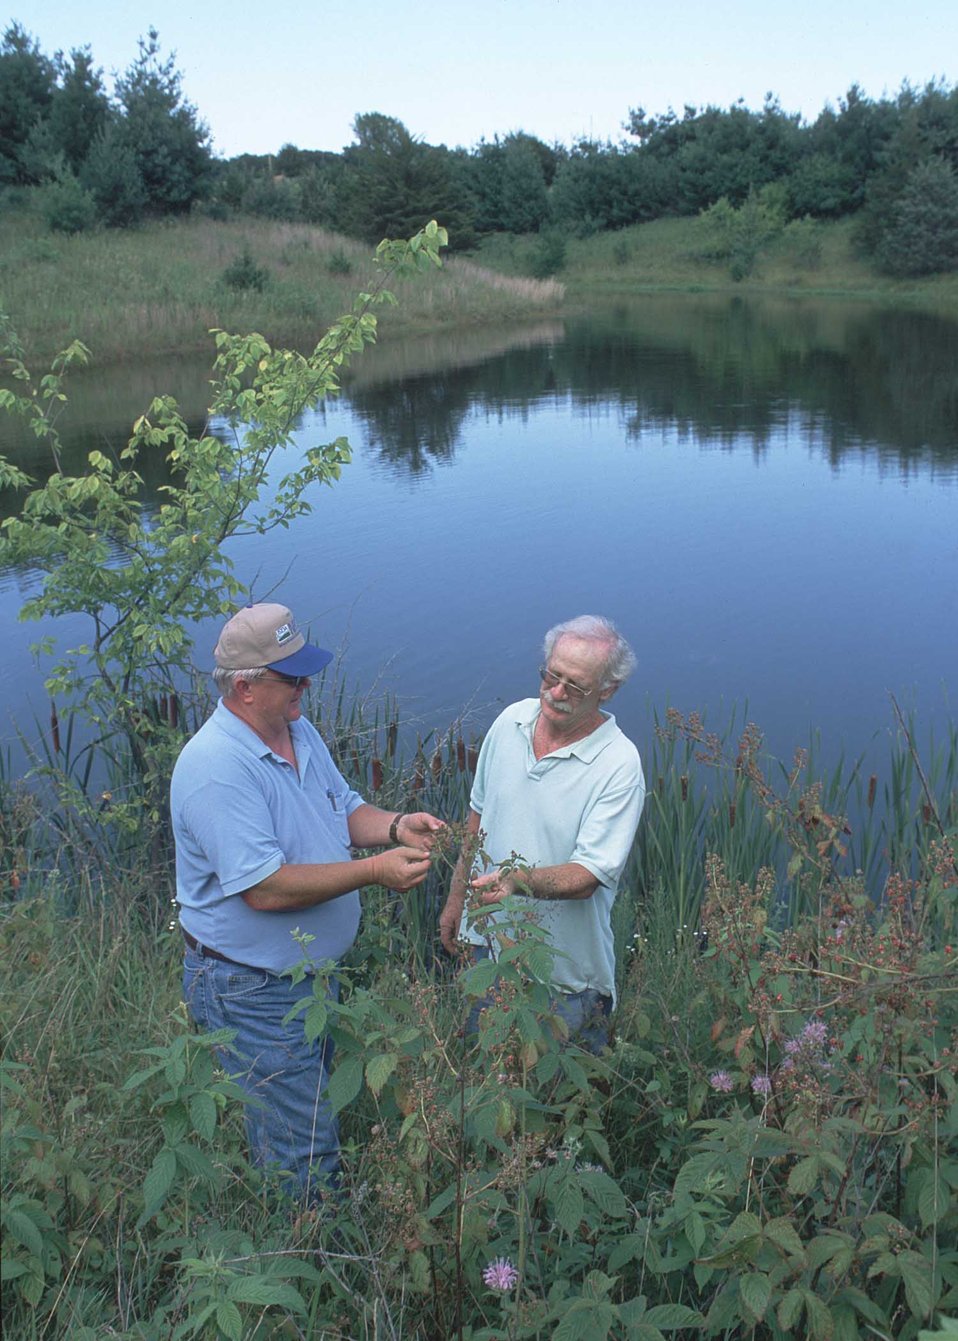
A well-designed farm pond with surrounding wildlife habitat was planned with NRCS assistance to offer excellent recreation in rural Van Buren County, Iowa.